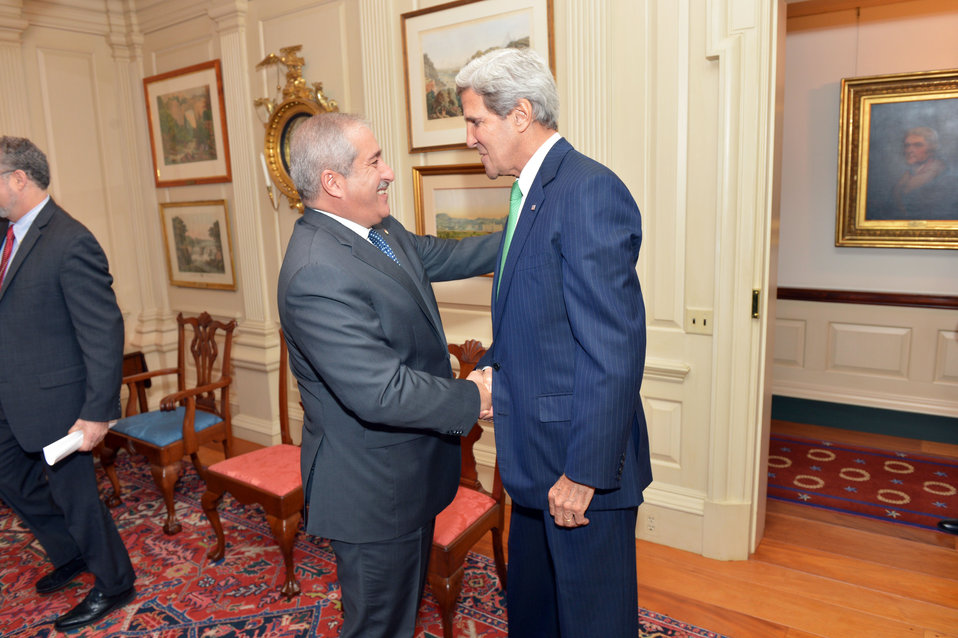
Secretary Kerry Shakes Hands With Jordanian Foreign Minister Judeh

U.S. Secretary of State John Kerry shakes hands with Jordanian Foreign Minister Nasser Judeh before their bilateral meeting at the U.S. Department of State in Washington, D.C., on October 15, 2013.